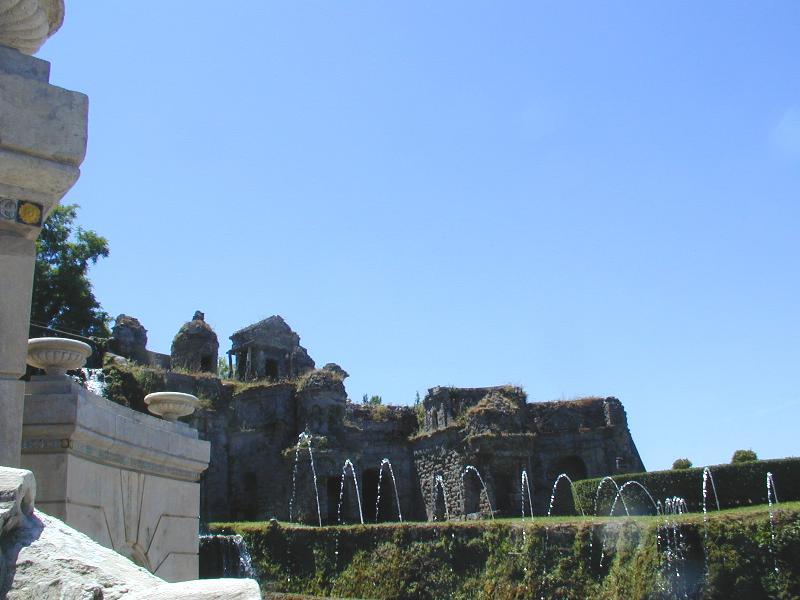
010609 17 villadesterometta